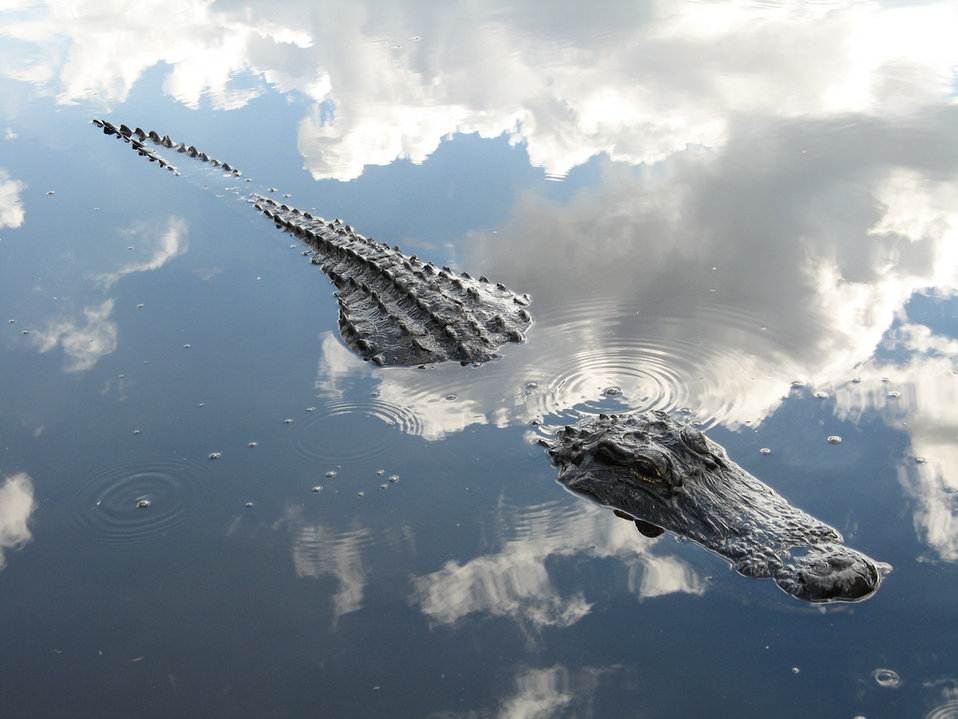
Dragon in the Sky

Uploaded for Flickr member orcasnowls.